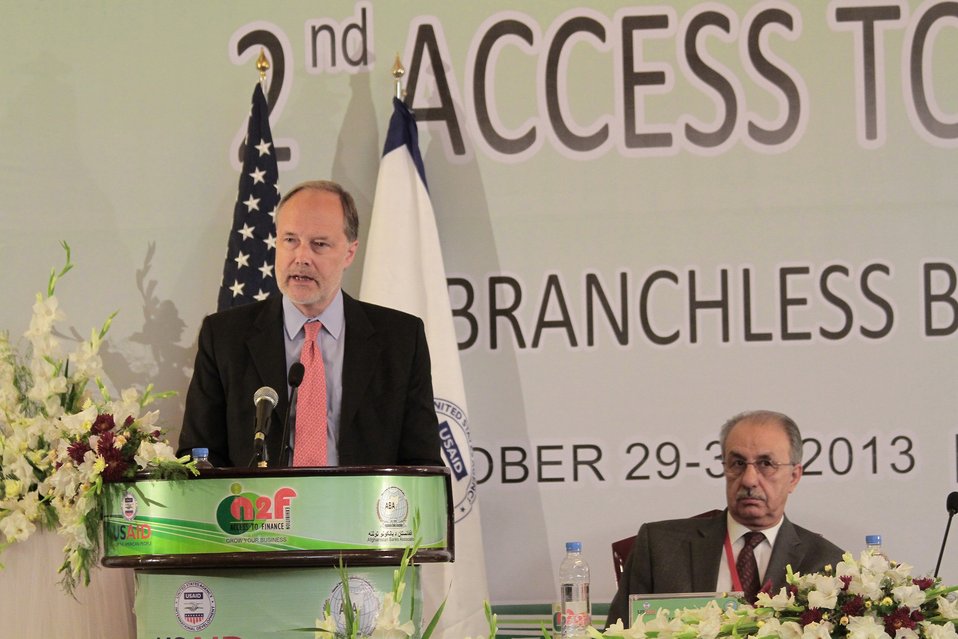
Ambassador Cunningham

U.S. Ambassador James B. Cunningham delivers remarks at the Second Access to Finance Exhibition in Kabul on Tuesday, October 29, 2013. Thousands of business representatives from across Afghanistan attended the exhibition promoting branchless banking and electronic payments.